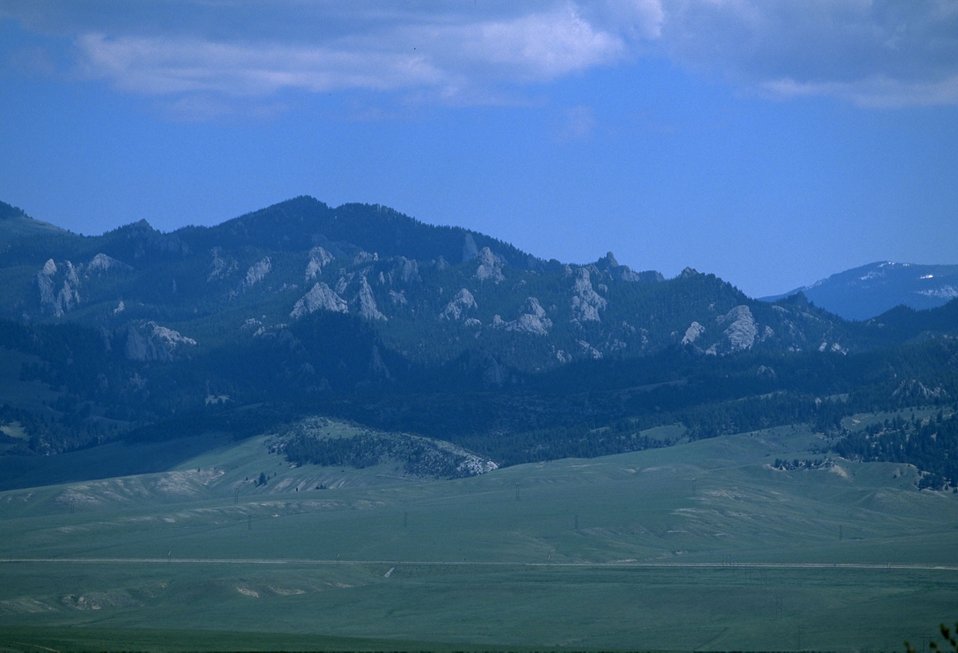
Mountain view in the Humbug Spires Wilderness Study Area